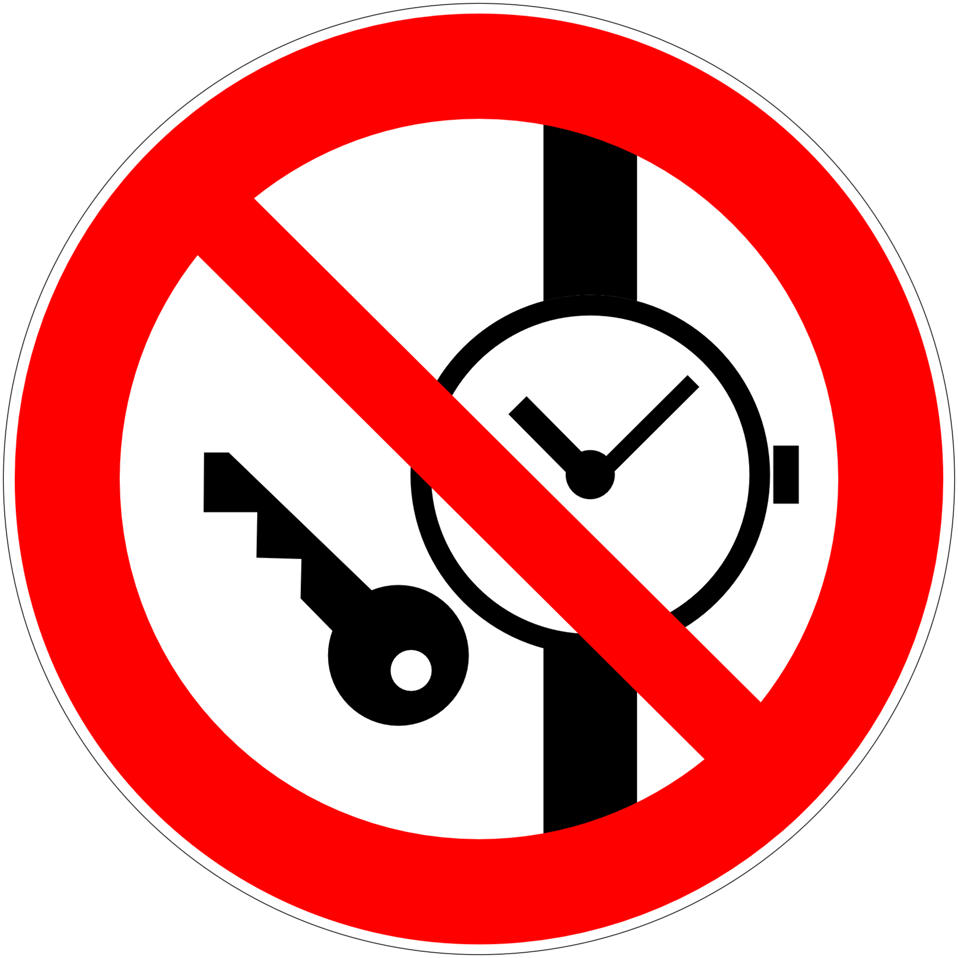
Deutsch: Mitführen von Metallteilen oder Uhren verboten, Verbotszeichen D-P020 nach DIN 4844-2 Do not carry metallic parts or watches, prohibition sign D-P020 according to German standard DIN 4844-2